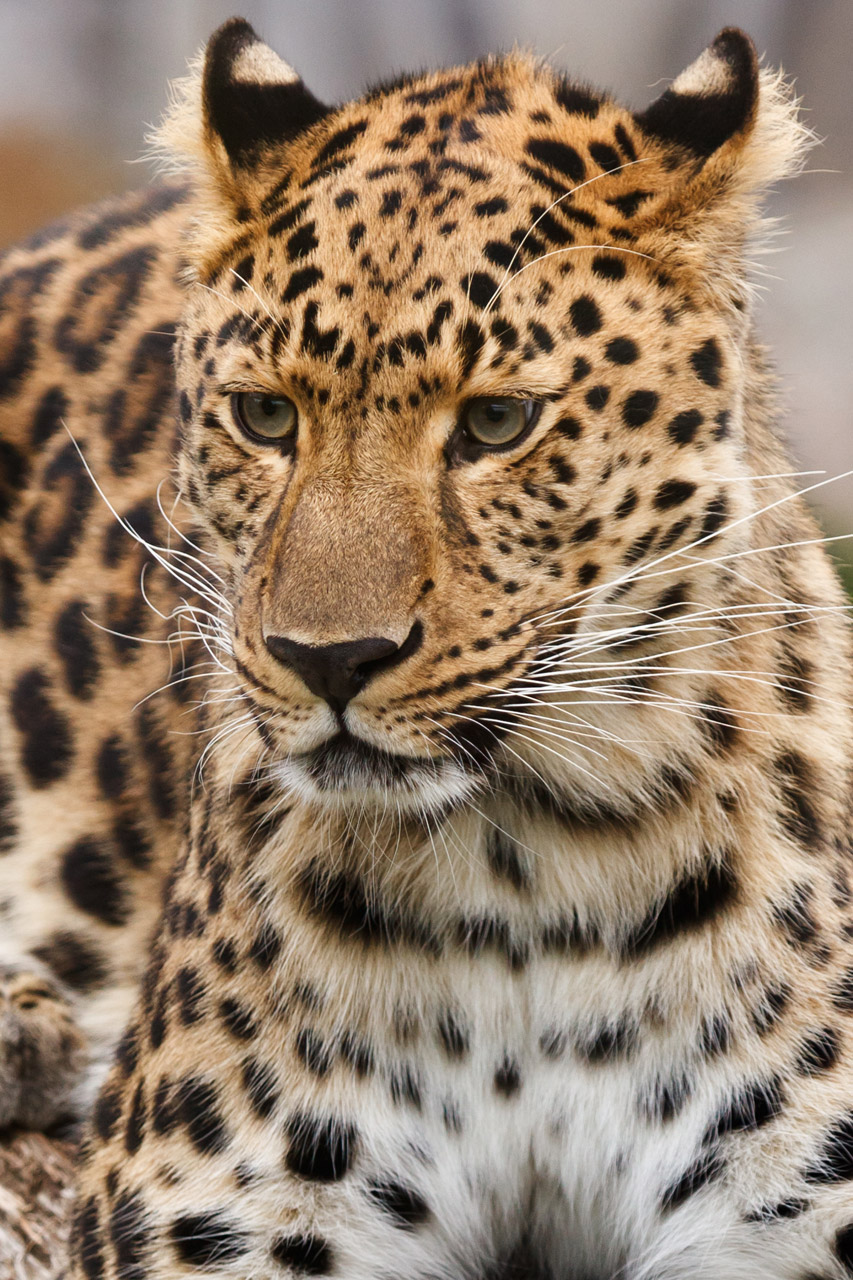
Portrait of a leopard.